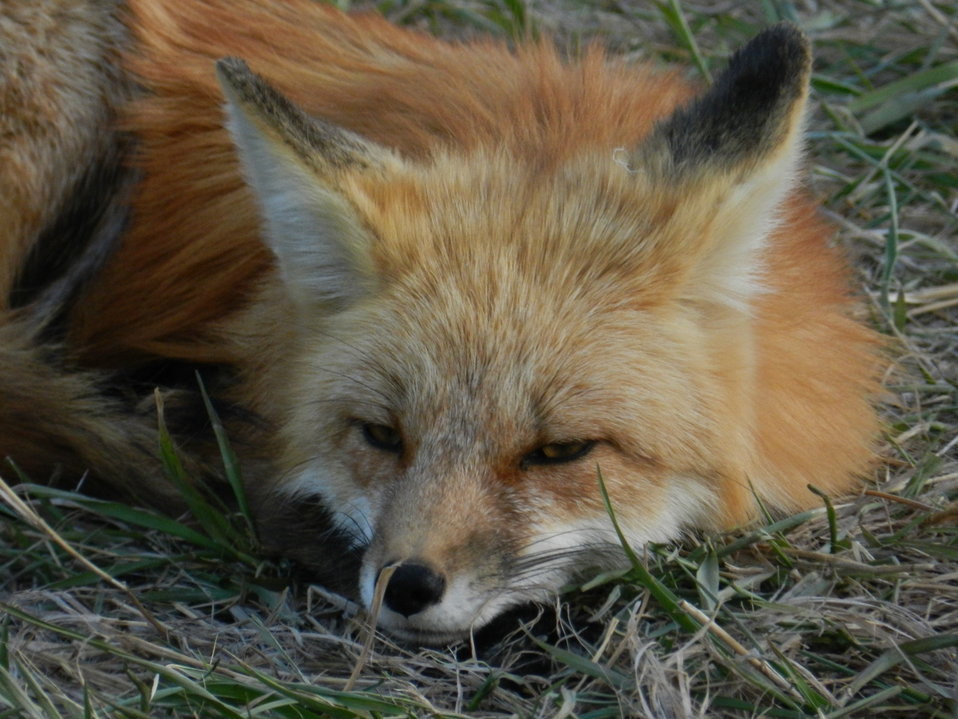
Red fox in Fort Collins, CO.

Credit: Pedro 'Pete' Ramirez, Jr. / USFWS